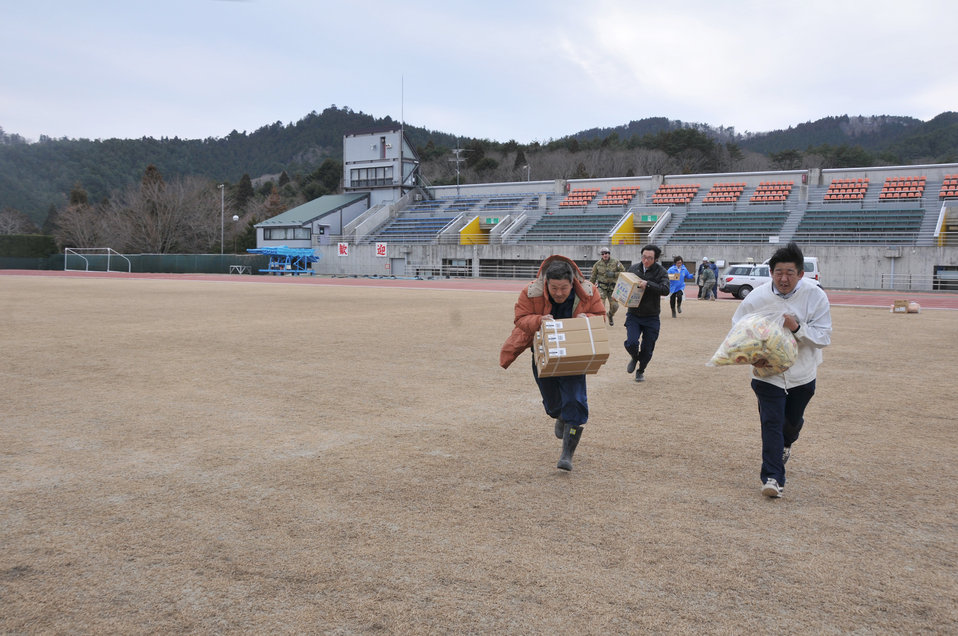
Airman perform search and rescue

SENDAI, Japan -- Japanese citizens rush donated food and supplies to an awaiting U.S. Air Force HH-60G Pave Hawk helicopter March 14.